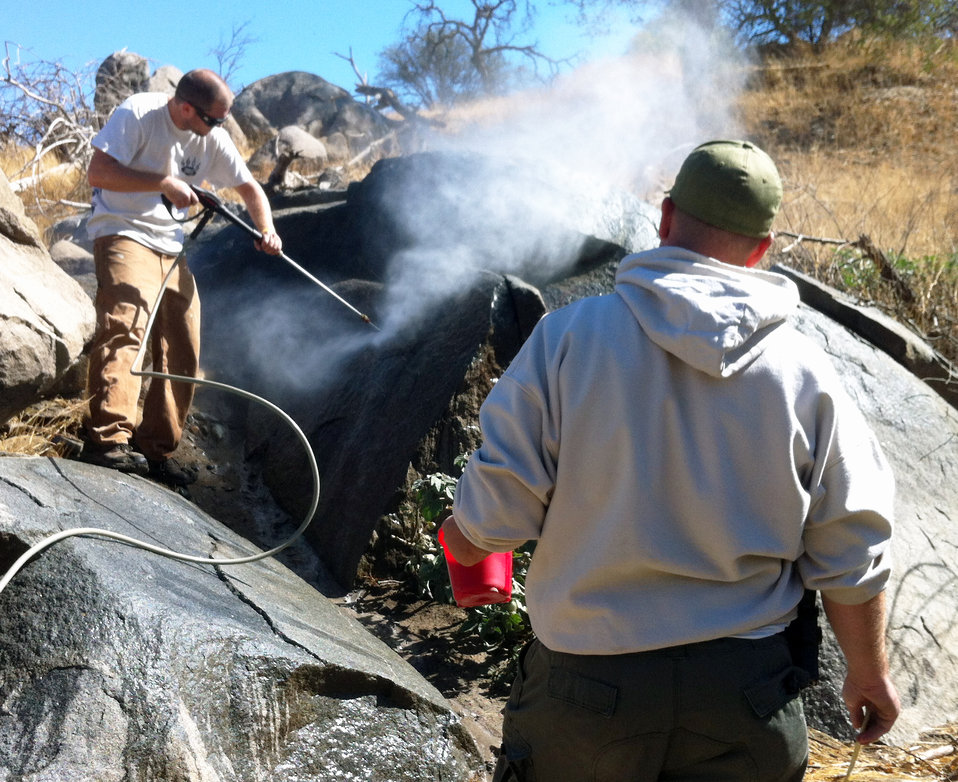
NPLD 2013 USACE Sacramento District

Volunteers work to remove graffiti at Cobble Knoll Recreation Area of Lake Kaweah, the U.S. Army Corps of Engineers Sacramento District park near Lemon Cove, Calif. This was one of several projects accomplished at Lake Kaweah during National Public Lands Day, Sept. 28, 2013.